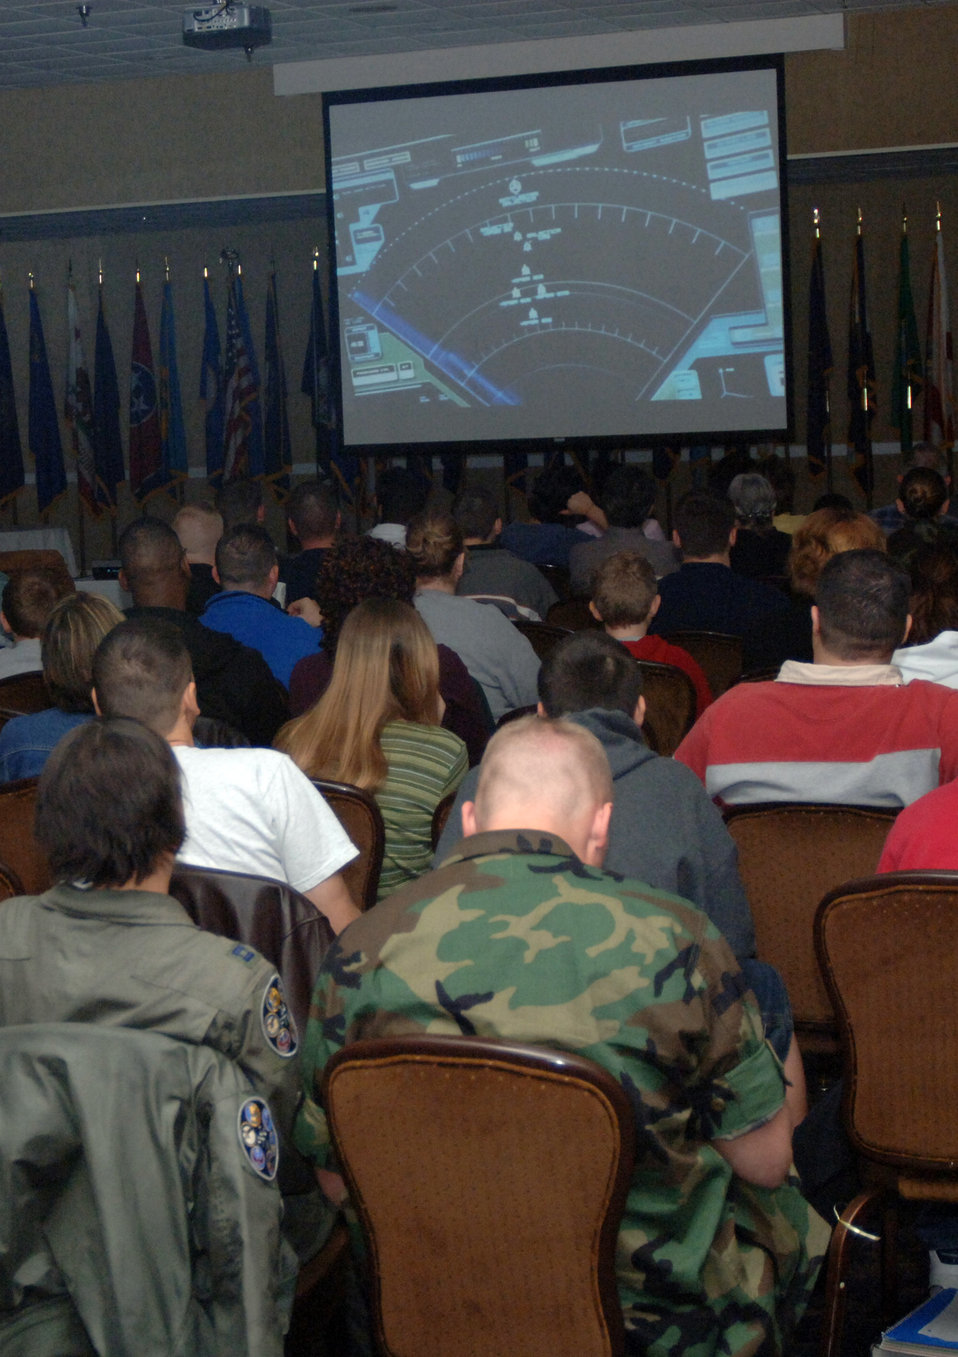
Battlestar Galactica

COLUMBUS AIR FORCE BASE, Miss. (AFPN) -- About 200